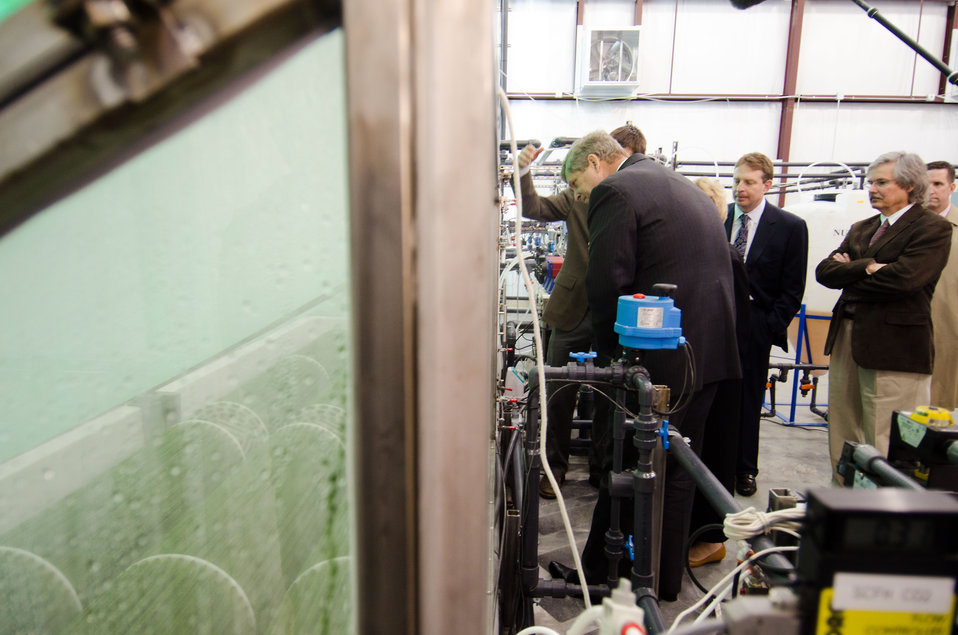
U.S. Department of Agriculture (USDA) Secretary Tom Vilsack (left) toured BioProcess Algae facility at Green Plains Renewable Energy (GPRE), Inc. and unveiled the Phase II key component - commercial scale photo bioreactors/harvesters; after which he talked with company leadership, biologists, and engineers; guests and news media during the grand opening ceremony on Friday, April 15, 2011 in Shenandoah, IA. The operation is co-located within an GPRE’s ethanol factory and where BioProcess Algae technology is used to waste products; carbon dioxide, recycled heat and water to mass-produce algae. Algae from this facility are used for animal feeds; pharmaceutical and beauty products.